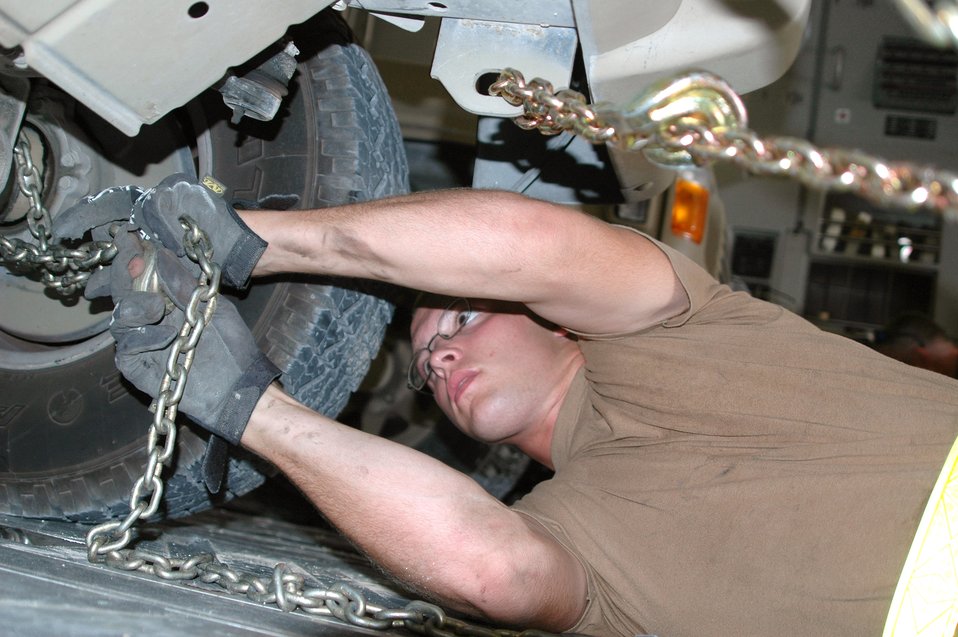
Pakistan relief efforts

SOUTHWEST ASIA -- Airman 1st Class Ryan Pappas chains down Qatari earthquake relief equipment aboard a C-17 Globemaster III. The Qatari aid supplies are bound for Pakistan. The Airman is with the 8th Expeditionary Air Mobility Squadron.